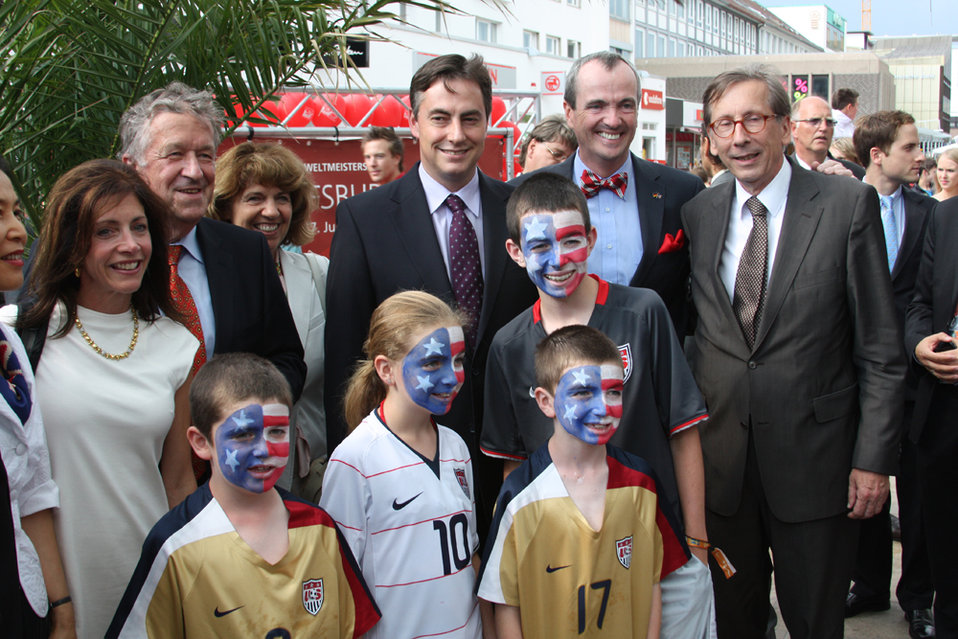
Ambassador Murphy Poses with Family, Consul General Patterson, Lord Mayor of Wolfsburg Prof. Schnellecke, Minister President McAllister, and Swedish Ambassador Carlsson

U.S. Ambassador to Germany Philip D. Murphy and his family pose with Consul General Patterson, Lord Mayor of Wolfsburg Professor Schnellecke, Minister President McAllister, and Swedish Ambassador Carlsson at the “Fanmeile” at Wolfsburg, Germany, on July 6, 2011.